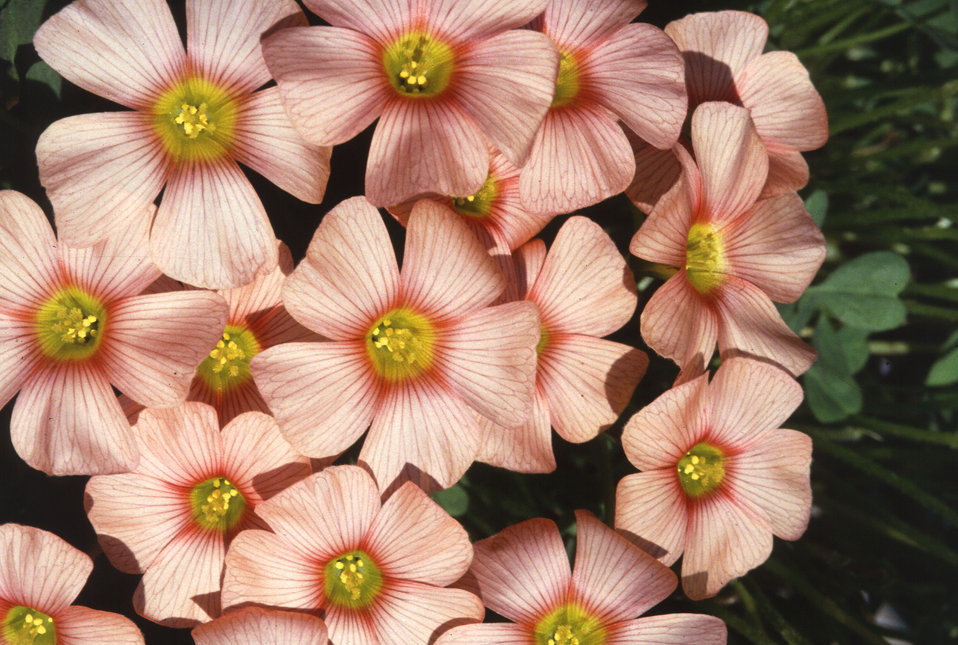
Wood sorrel (Oxalis) is an annual or perennial herbaceous plant with white, pink or yellow flowers.